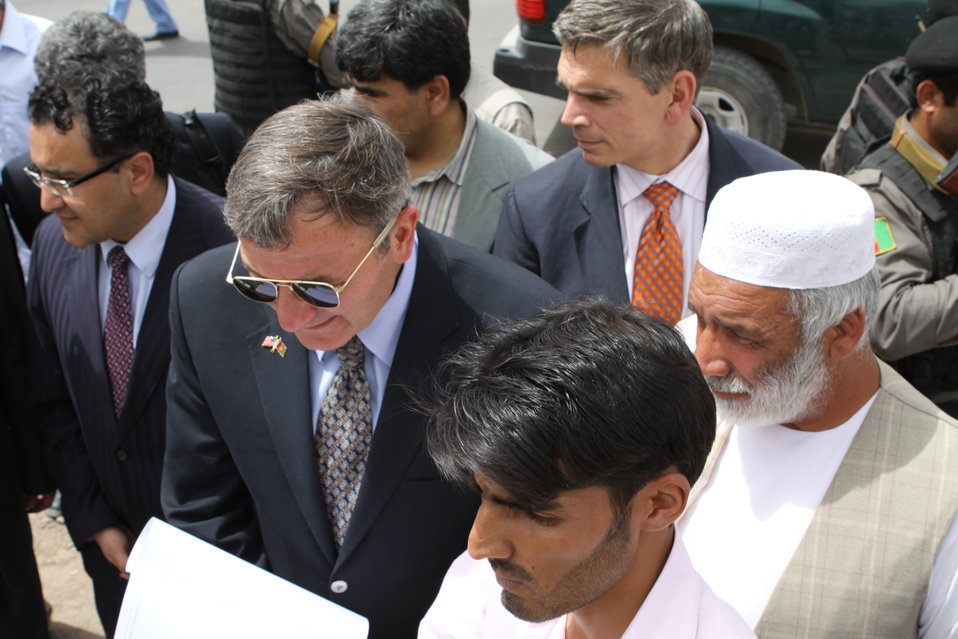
100525 Hirat Marble Conference 613